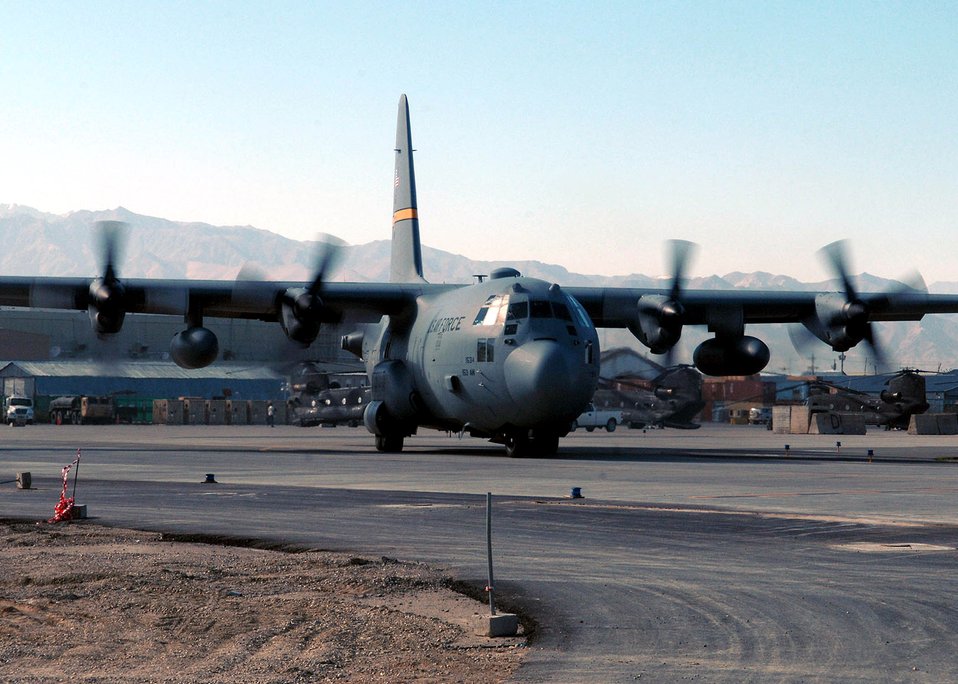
August 30 Airpower Summary

A C-130 Hercules taxis before a flight from Bagram Airfield, Afghanistan. The C-130 mission at Bagram ranges from personnel transport, cargo and humanitarian airlift and aeromedical evacuation. C-130s as well as other Coalition aircraft flew 125 airlift sorties moving 3,300 passengers Aug. 30. The C-130 is from the Wyoming Air National Guard.